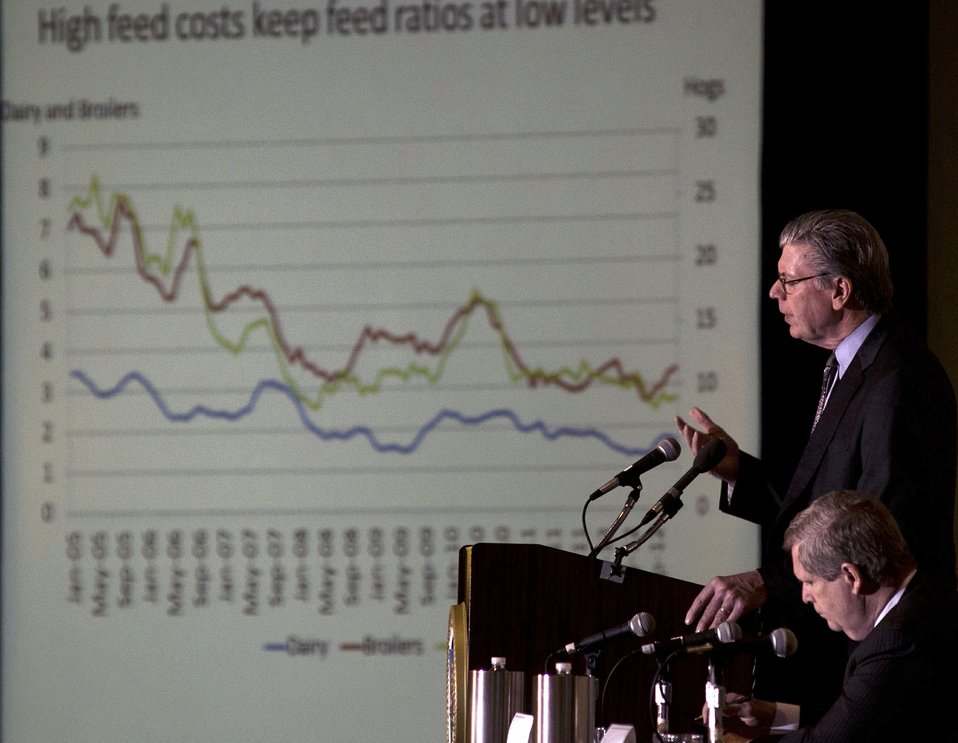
Agriculture Chief Economist Joseph Glauber presents remarks on the 2013 Agricultural Economic and Foreign Trade Outlook at the Opening session of the 2013 Agriculture Outlook Forum, in Crystal City, VA, on Thursday, February 21, 2013. Agriculture Secretary Tom Vilsack listens to the presentation.